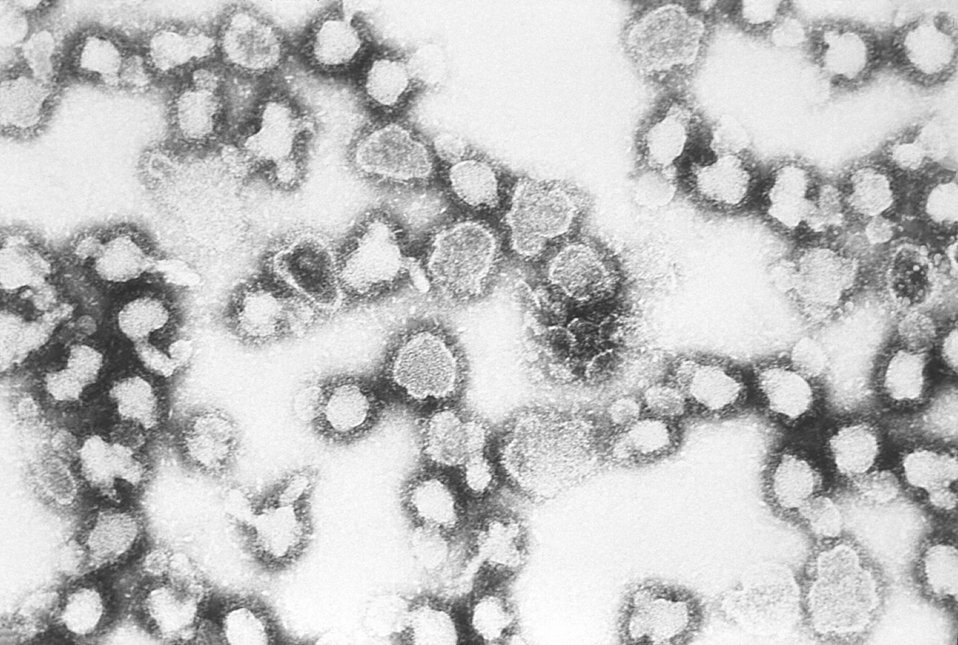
This electron micrograph reveals the morphologic traits of the LaCrosse virus (LACV), a Bunyaviridae virus family member.